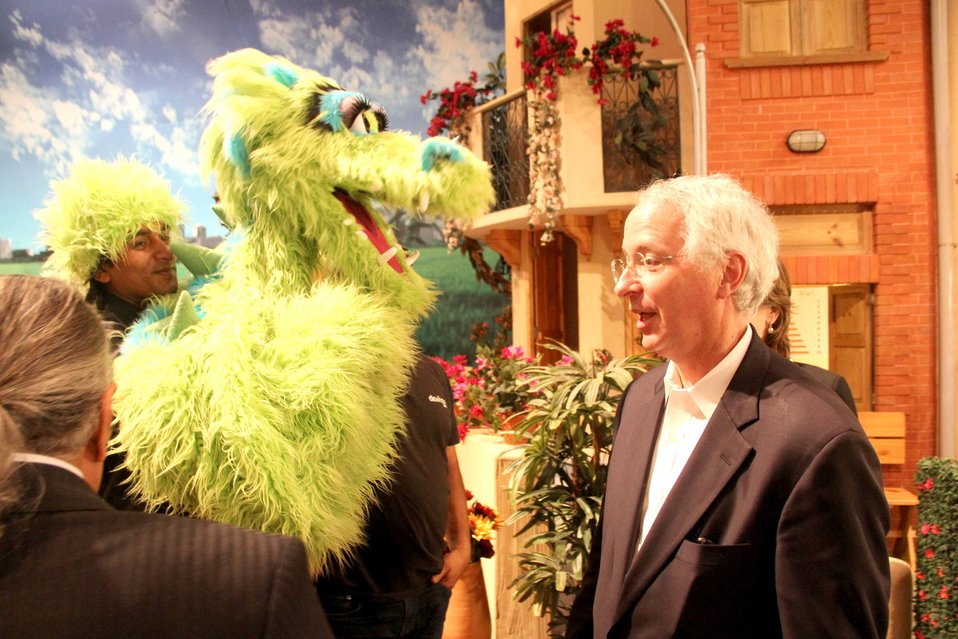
U.S. Ambassador’s Visit to Sim Sim Hamara Highlights U.S. Commitment to Improved Children’s Education in Pakistan at Lahore on 28 April, 2012